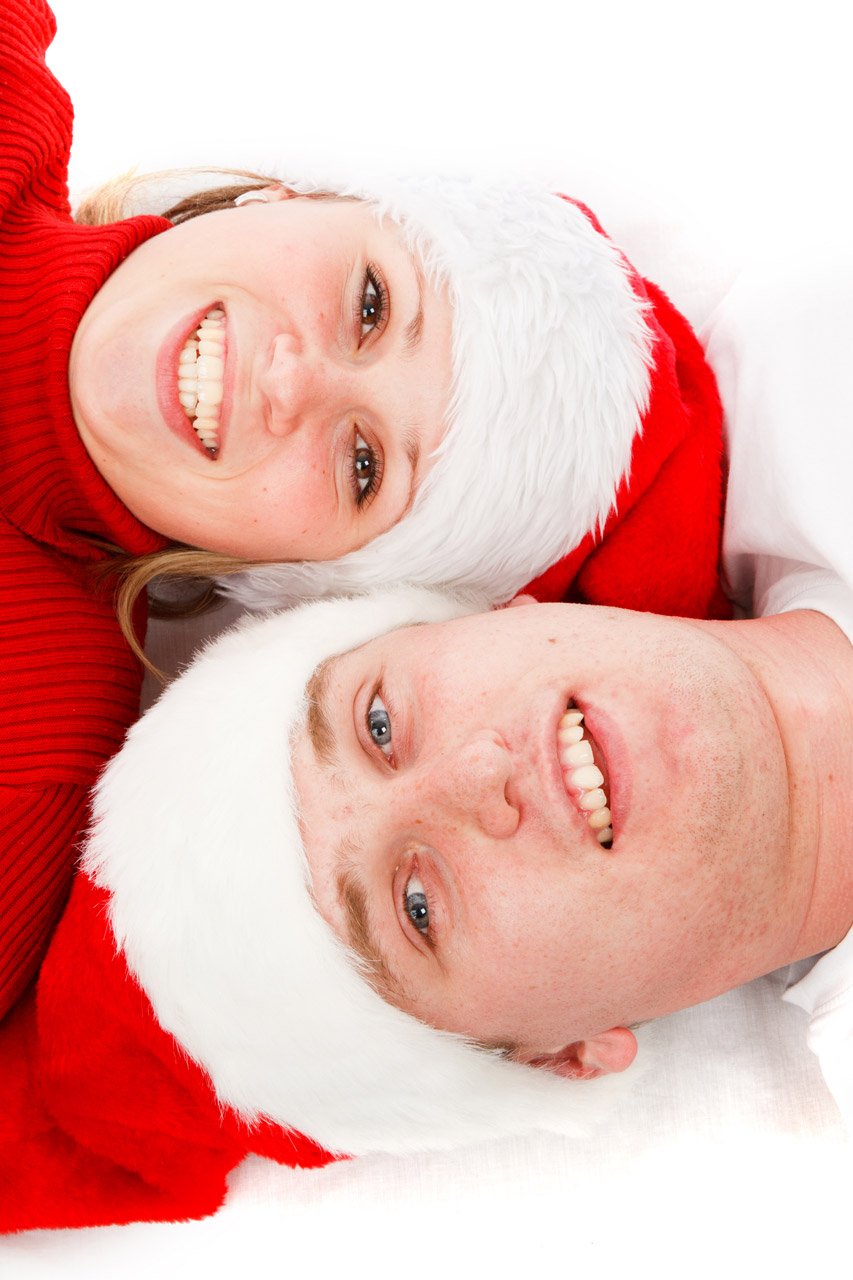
Young couple at christmas

Young couple wearing santa hats on white background.